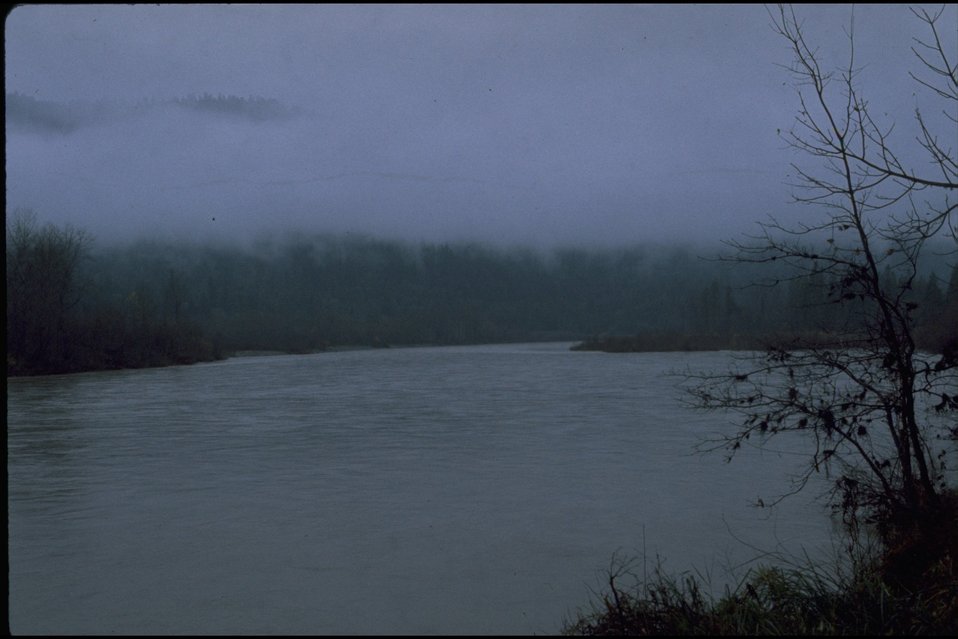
Rogue River, Ferry Park. Hellgate Recreation Area high water.